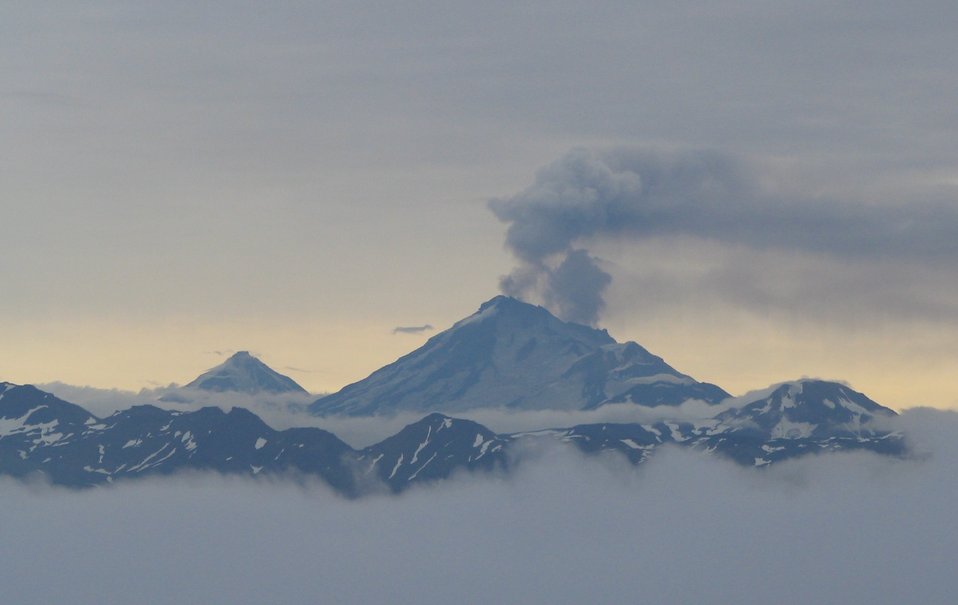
2007 eruption of Pavlof Volcano

Eruption of Pavlof Volcano on August 30, 2007, Alaska Peninsula